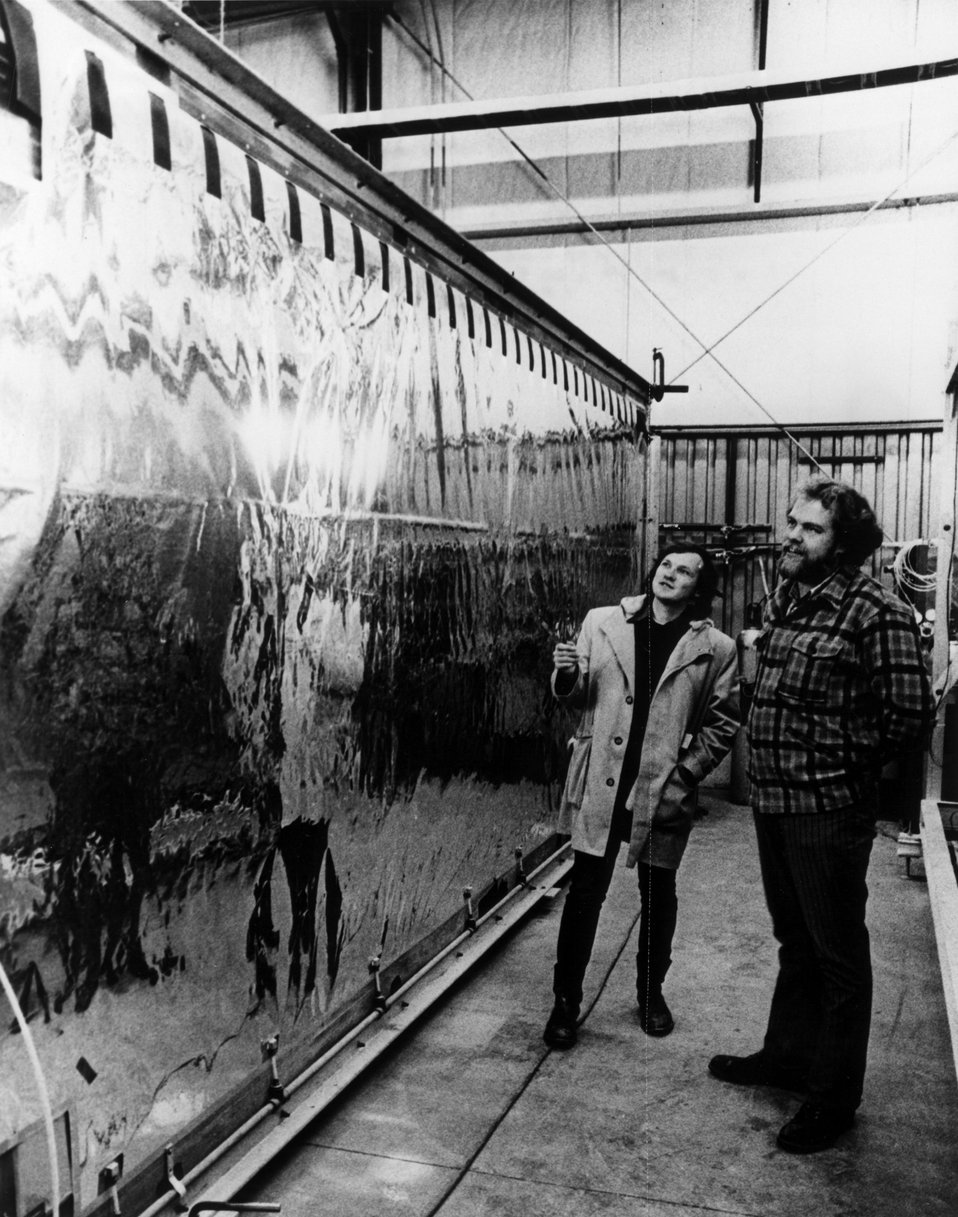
Two members of Experimental Group #98, a (illegible) detection experiment at the National Accelerator Laboratory. c. 1974